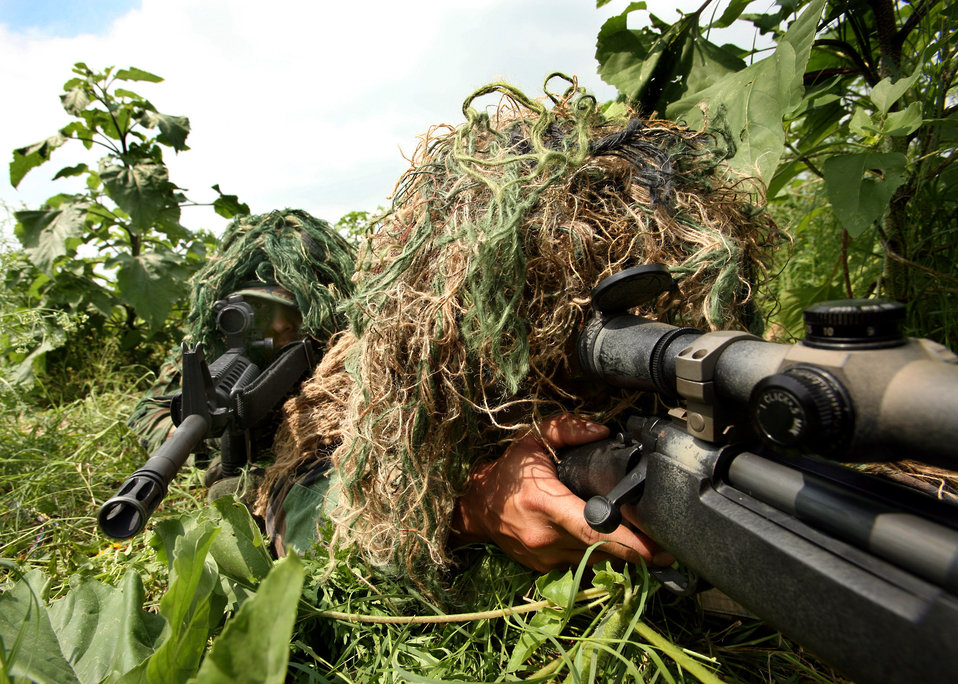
Go ahead, make my day

Senior Airman Andrew Caro (left) and Staff Sgt. Dustin Maglinti take aim toward a target building during a training scenario for the 37th Training Wing's Emergency Services Team May 4 at Lackland Air Force Base, Texas. Airman Caro and Sergeant Maglinti are close precision engagement team members and are hidden in brush wearing their